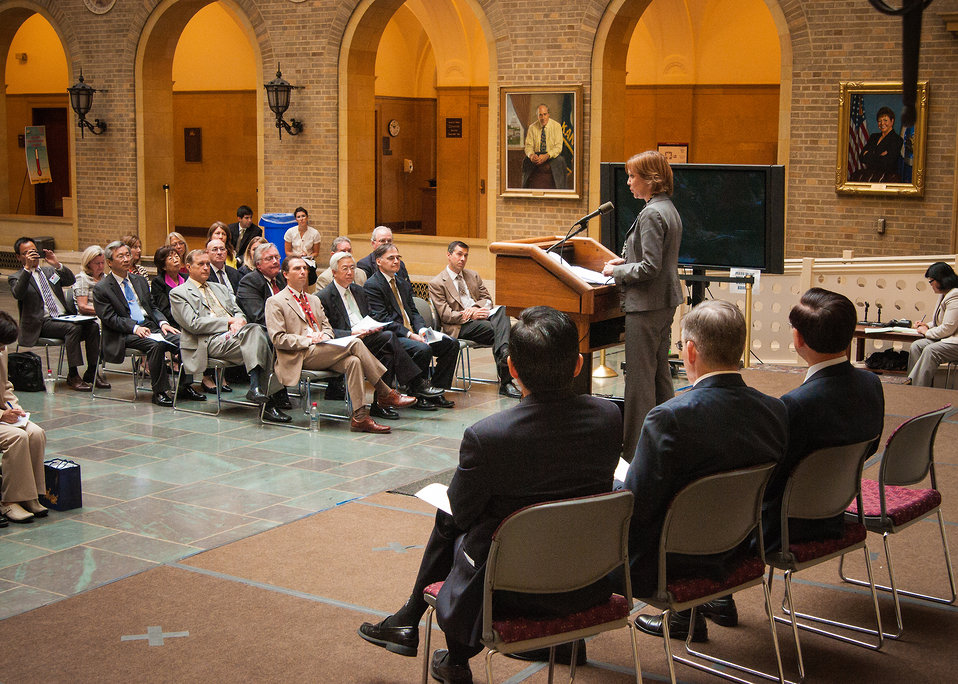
Deputy Undersecretary, Farm and Foreign Agricultural Services Darcy Vetter welcomes representatives of the Taiwan 2013 Goodwill Trade Mission to the United States Department of Agriculture in Washington, DC, Mon. Sept. 9, 2013.